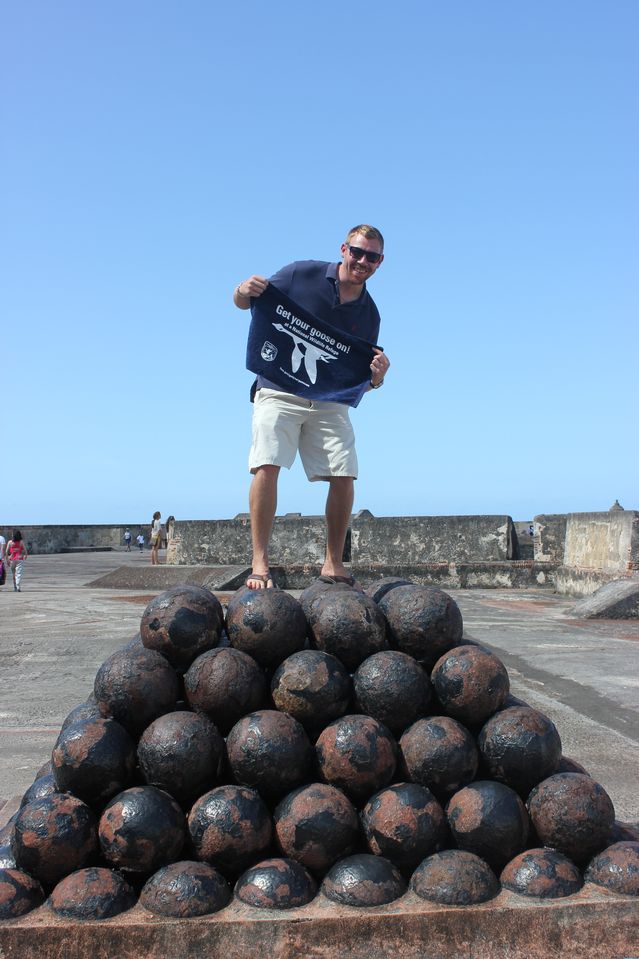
GYGO! - Cannonball Style!

St. Thomas resident, Justin Workman, gets his goose on atop a pyramid of cannonballs at Castillo de San Cristobal - the largest fortification in Puerto Rico, and the largest fort built by the Spanish in the Western Hemisphere.